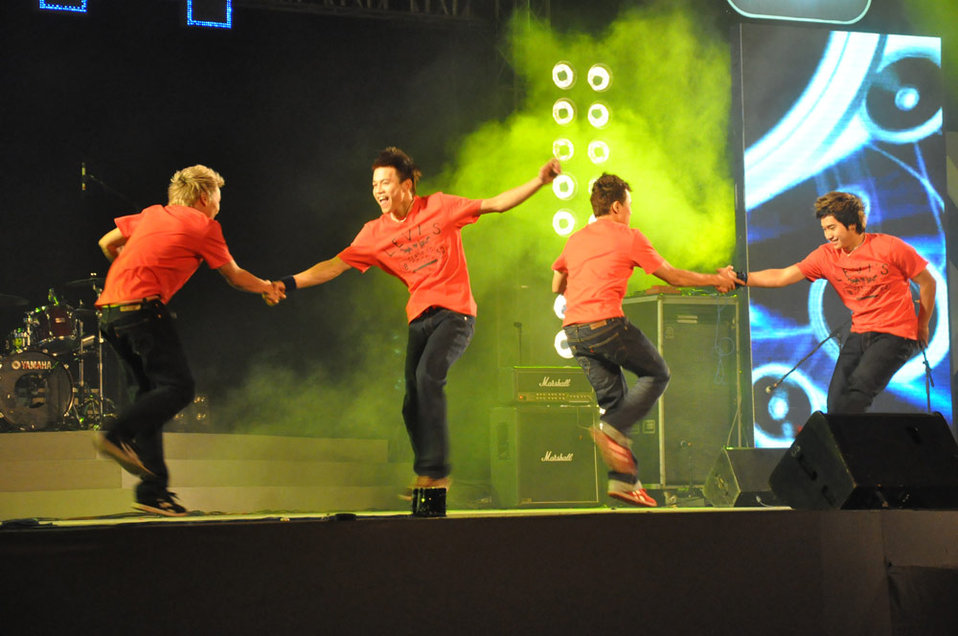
USAID Vietnam and MTVEXIT against Human Trafficking

Hanoi concert, March 27, 2010